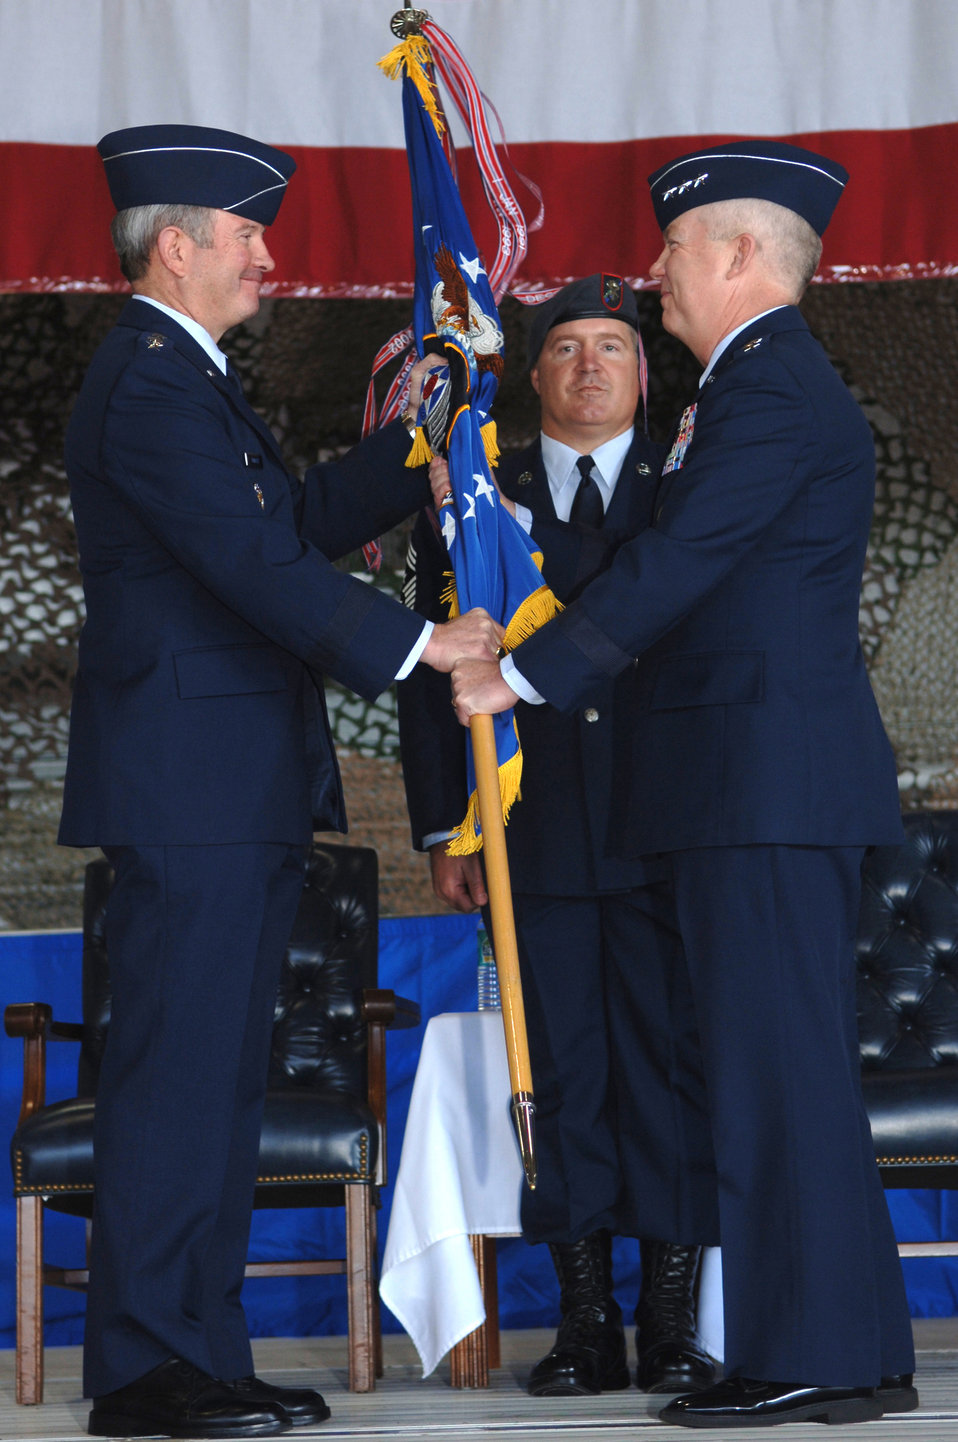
AFSOC welcomes new commander

Lt. Gen. Donnie Wurster (right) accepts command of Air Force Special Operations Command from Air Force Vice Chief of Staff Gen. Duncan McNabb (left) as Chief Master Sgt. Michael Gilbert looks on during a change of command ceremony Nov. 27 at Hurlburt Field, Fla.